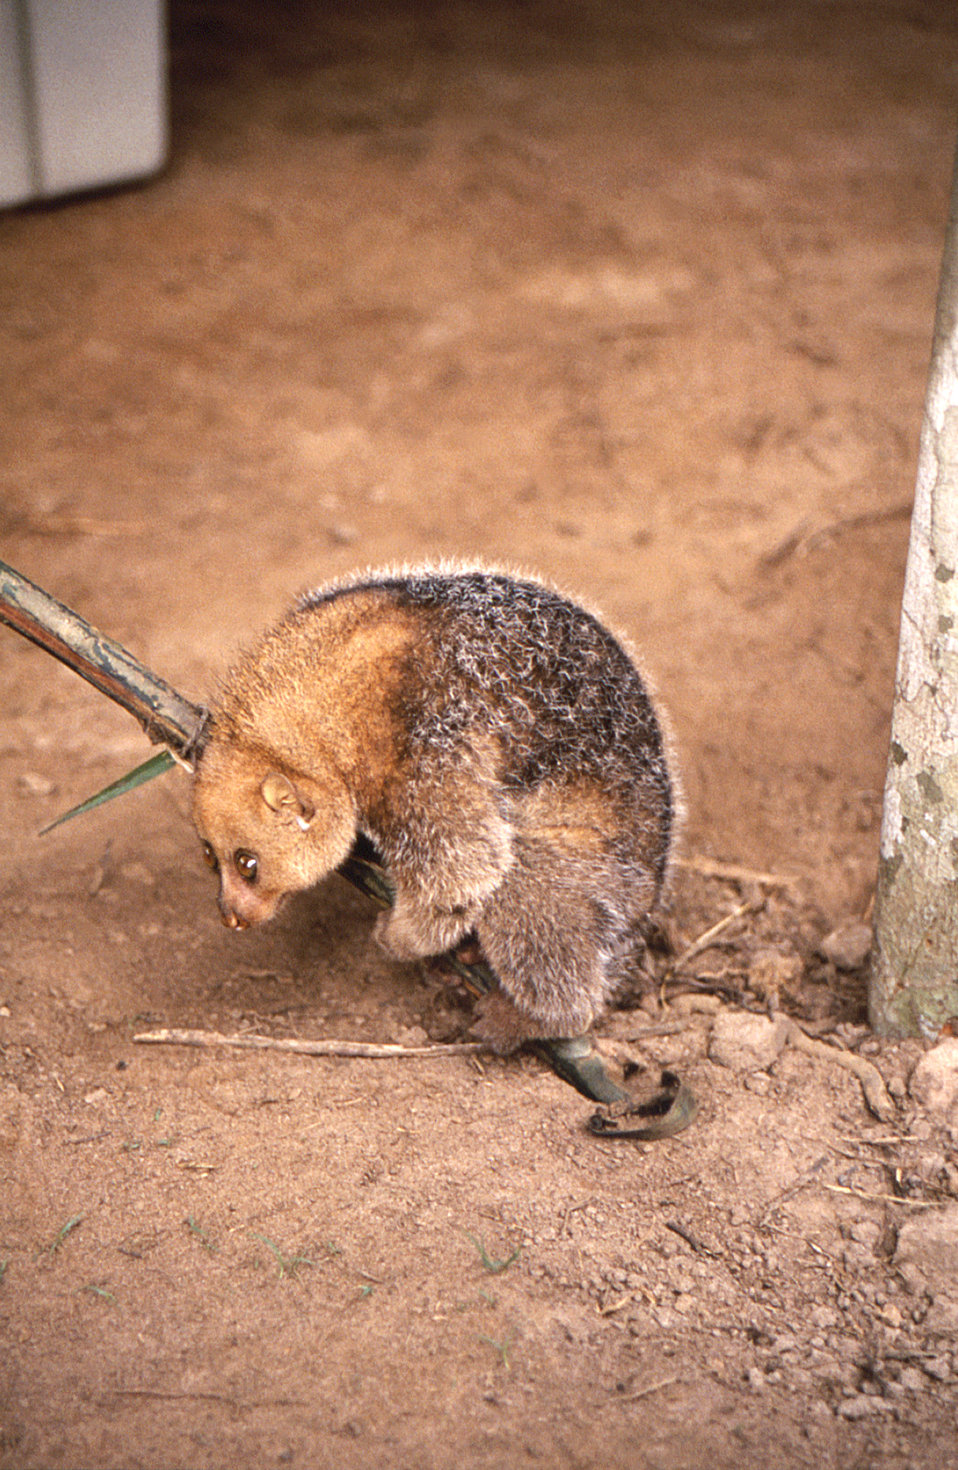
This image was created during a investigation into an outbreak of monkeypox, which took place in the Democratic Republic of the Congo (DRC), 1996 to 1997, formerly Zaire. Depicted here, was a Bosman's potto, Perodicticus potto, that underwent a monkeypox virus plaque reduction neutralization antibody assay, which provided to be negative for any disease.